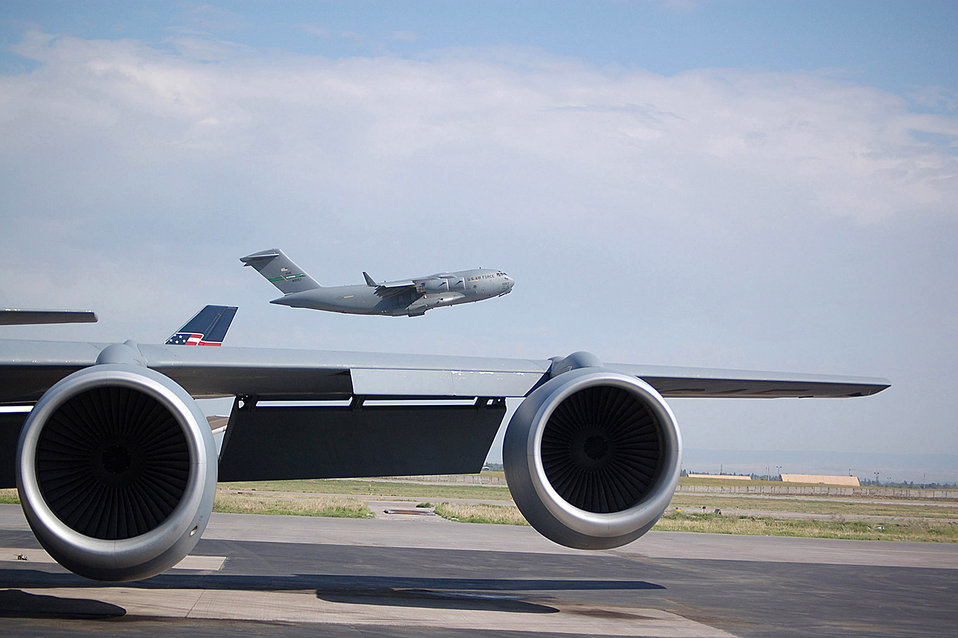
Airpower summary for May 28, 2007

A C-17 Globemaster III assigned to 817th Expeditionary Airlift Squadron's Detachment 1 at Manas Air Base, Kyrgyz Republic, takes off on a resupply mission. C-17s along with C-130 Hercules aircraft flew 139 sorties May 28 and offloaded 820 tons of cargo.